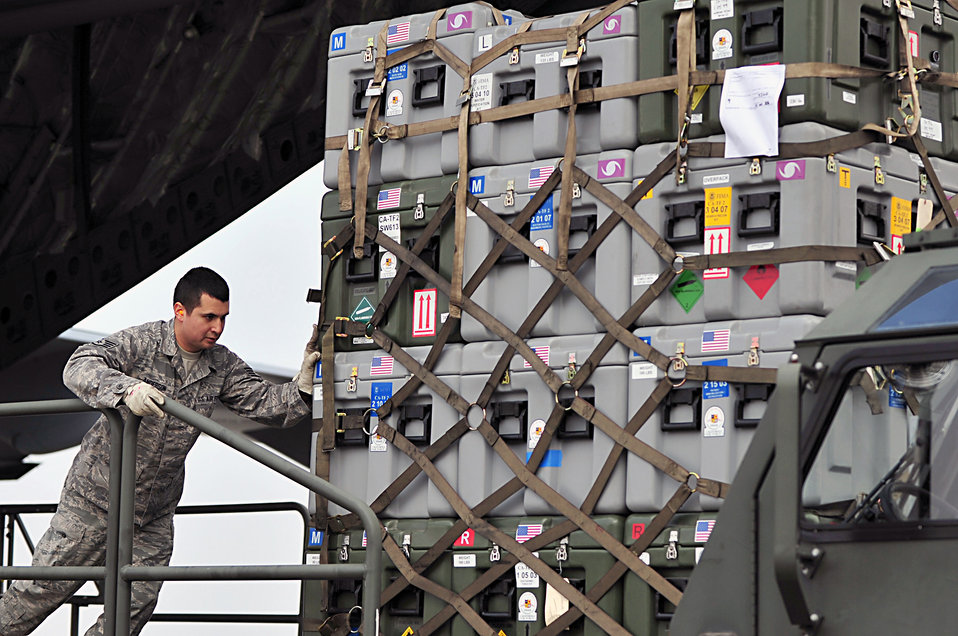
Help is on the way

Staff Sgt. James Anderson moves supplies onto a cargo loader Mar. 13, 2011, at Misawa Air Base, Japan, as part of a humanitarian relief effort in the aftermath of the earthquake and subsequent tsunami that struck Japan March 11. Sergeant Anderson is assigned to the 35th Logistics Readiness Squadron.